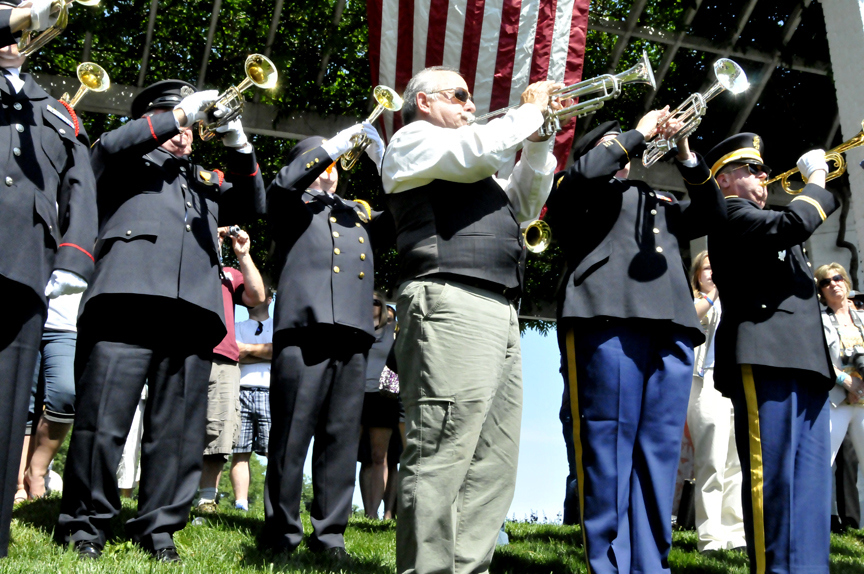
150th anniversary of taps

Buglers from across the nation gathered at Arlington National Cemetery on Saturday, May 19, 2012 to honor the 150th anniversary of taps.